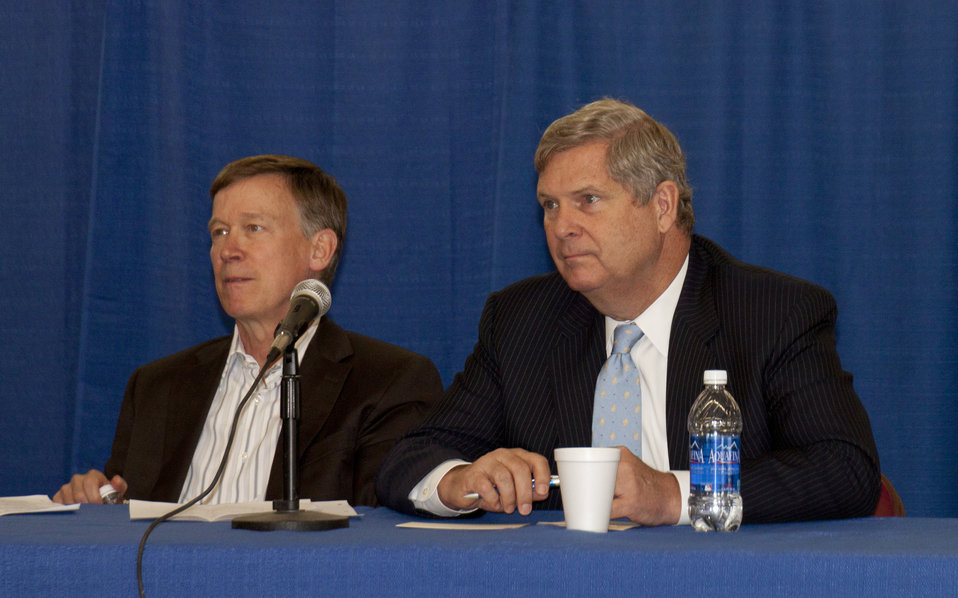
Colorado Governor John Hickenlooper (left) and Agriculture Secretary Tom Vilsack listen to questions from the audience at the Forum and Panel Discussion “Trade and Exports: Bringing Rural and Urban Development Together” at the Colorado State Fairground, 4H Auditorium in Pueblo, CO., on Thursday, October 11, 2012.